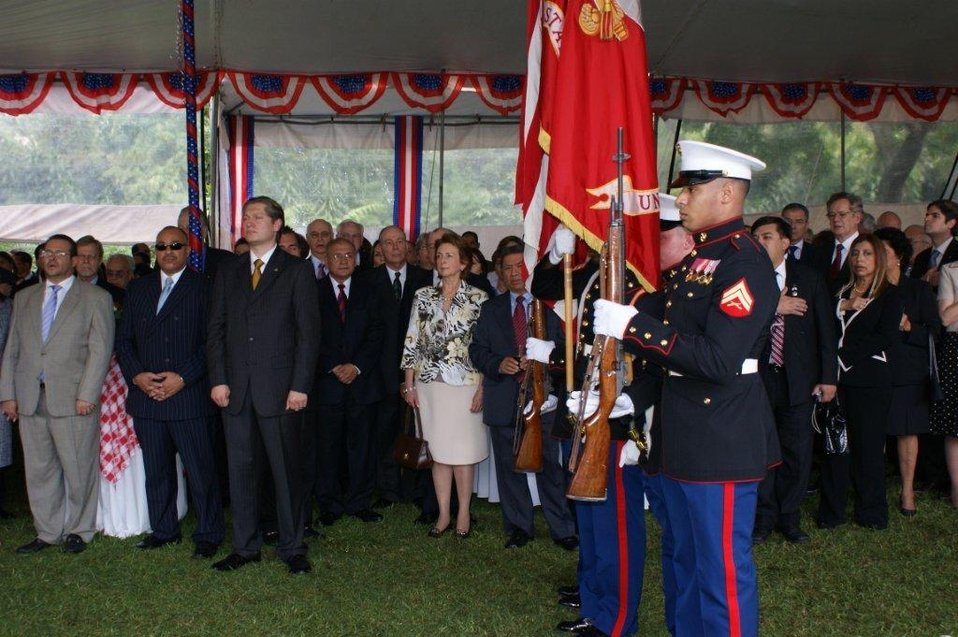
July 4th Celebration at U.S. Embassy in Guatemala

U.S. Marines stand at attention as the Guatemalan and U.S. national anthems are sung during the U.S. Independence Day celebration at the Ambassador's Residence in Guatemala City, Guatemala, on July 2, 2010.